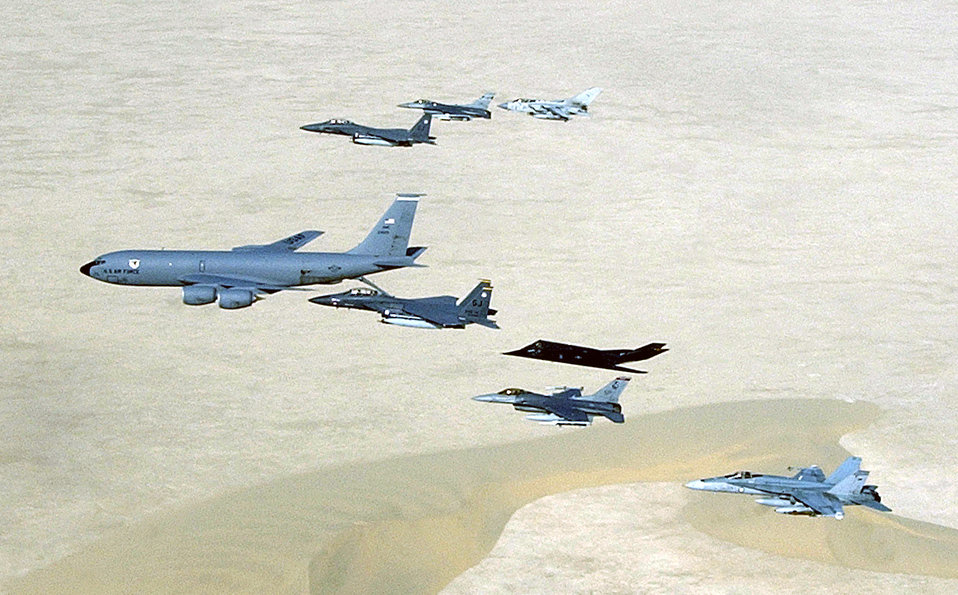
Gas line

OPERATION IRAQI FREEDOM -- Aircraft of the 379th Air Expeditionary Wing and coalition counterparts fly over the desert April 14. Aircraft include the KC-135 Stratotanker, F-15E Strike Eagle, F-117 Nighthawk, F-16 Fighting Falcon, British GR-4 Tornado and Australian F/A-18 Hornet.